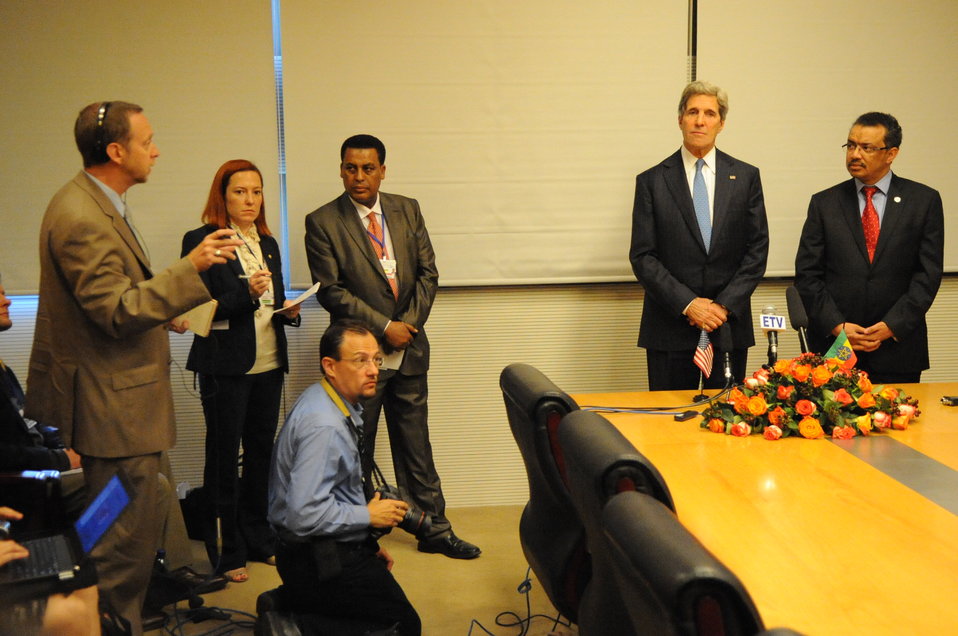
Secretary Kerry and Ethiopian Foreign Minister Adhanom Hold a News Conference in Addis Ababa

U.S. Secretary of State John Kerry takes a question from Scott Stearns of Voice of America, as he and Ethiopian Foreign Minister Tedros Adhanom hold a news conference at the 50th anniversary African Union Summit in Addis Ababa, Ethiopia, on May 25, 2013.